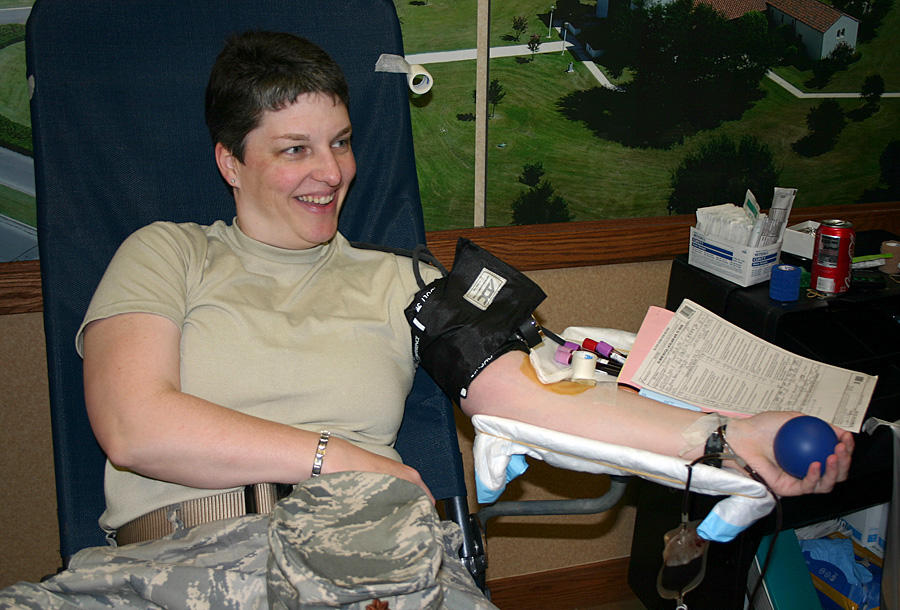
AFPC hosts blood drive to support warfighters

Maj. Teri Noffsinger, Air Force Personnel Center non-rated officer assignments, donates a pint of blood during an AFPC blood drive April 17 at Randolph Air Force Base, Texas. AFPC members gave more than 40 pints of blood that will be used to supply life-saving blood products to warfighters in Operation Iraqi Freedom and Operation Enduring Freedom.